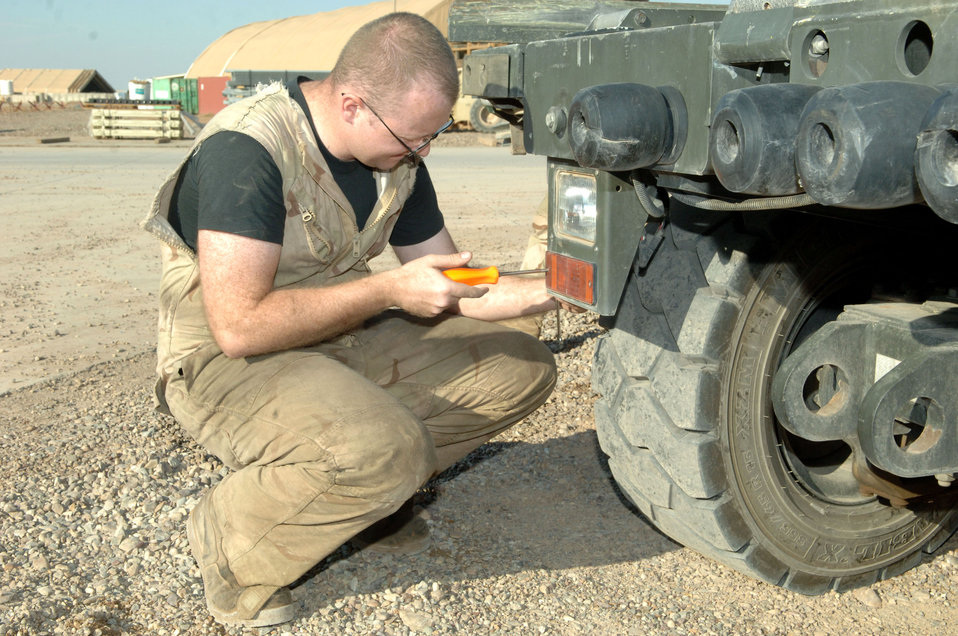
Balad vehicle maintenance

Senior Airman Devin Sigle, 332nd Expeditionary Logistics Readiness Squadron, replaces a parking light bulb at Balad Air Base, Iraq. Airman Sigle is a vehicle maintenance journeyman deployed from Yokota Air Base, Japan.